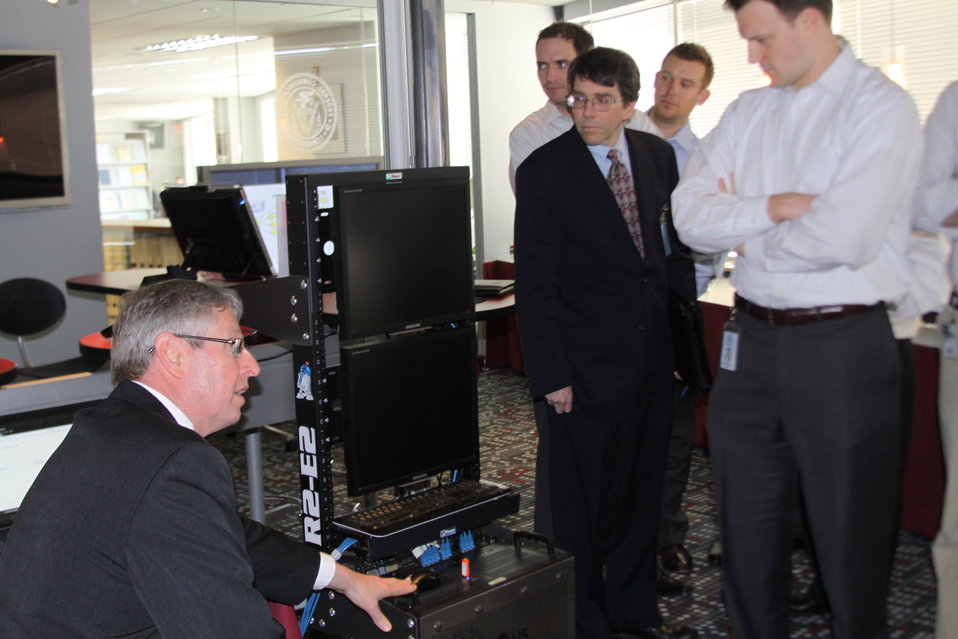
Technology Experience Center Demonstration